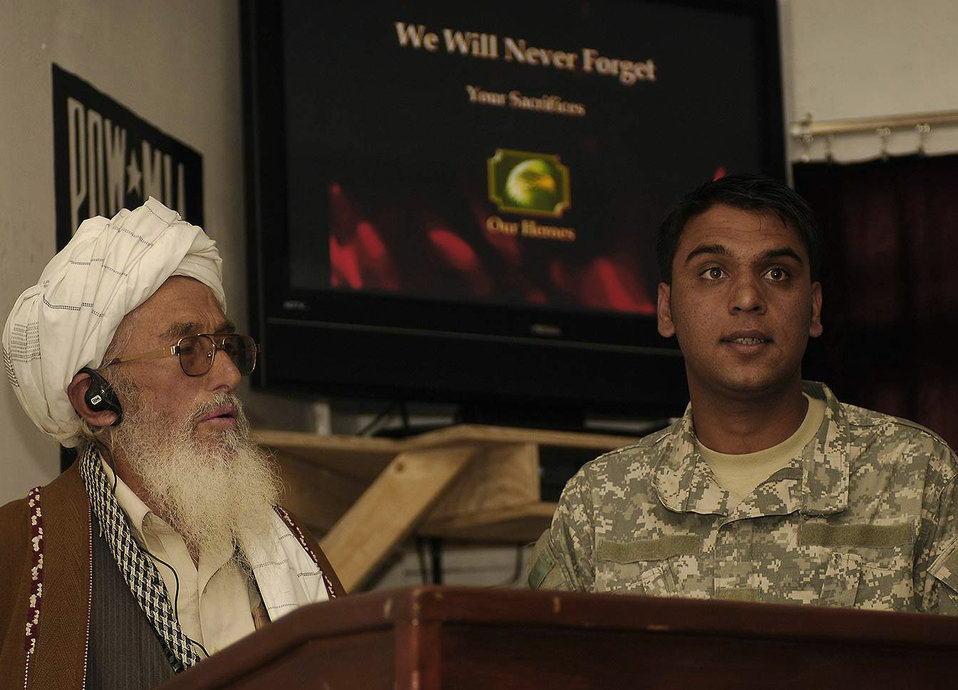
Panjshir reconstruction team bids farewell to fallen comrades

A Panjshir mullah, assisted by Qader, a Panjshir Provincial Reconstruction Team interpreter, offers a prayer and expresses his condolences for the loss of four members of the Panjshir Provincial Reconstruction Team during a May 31 memorial at Forward Operating Base Lion, Afghanistan. The mullah also shared his heartfelt appreciation for the sacrifices the team has made to improve the lives of Afghans living in Panjshir Province.